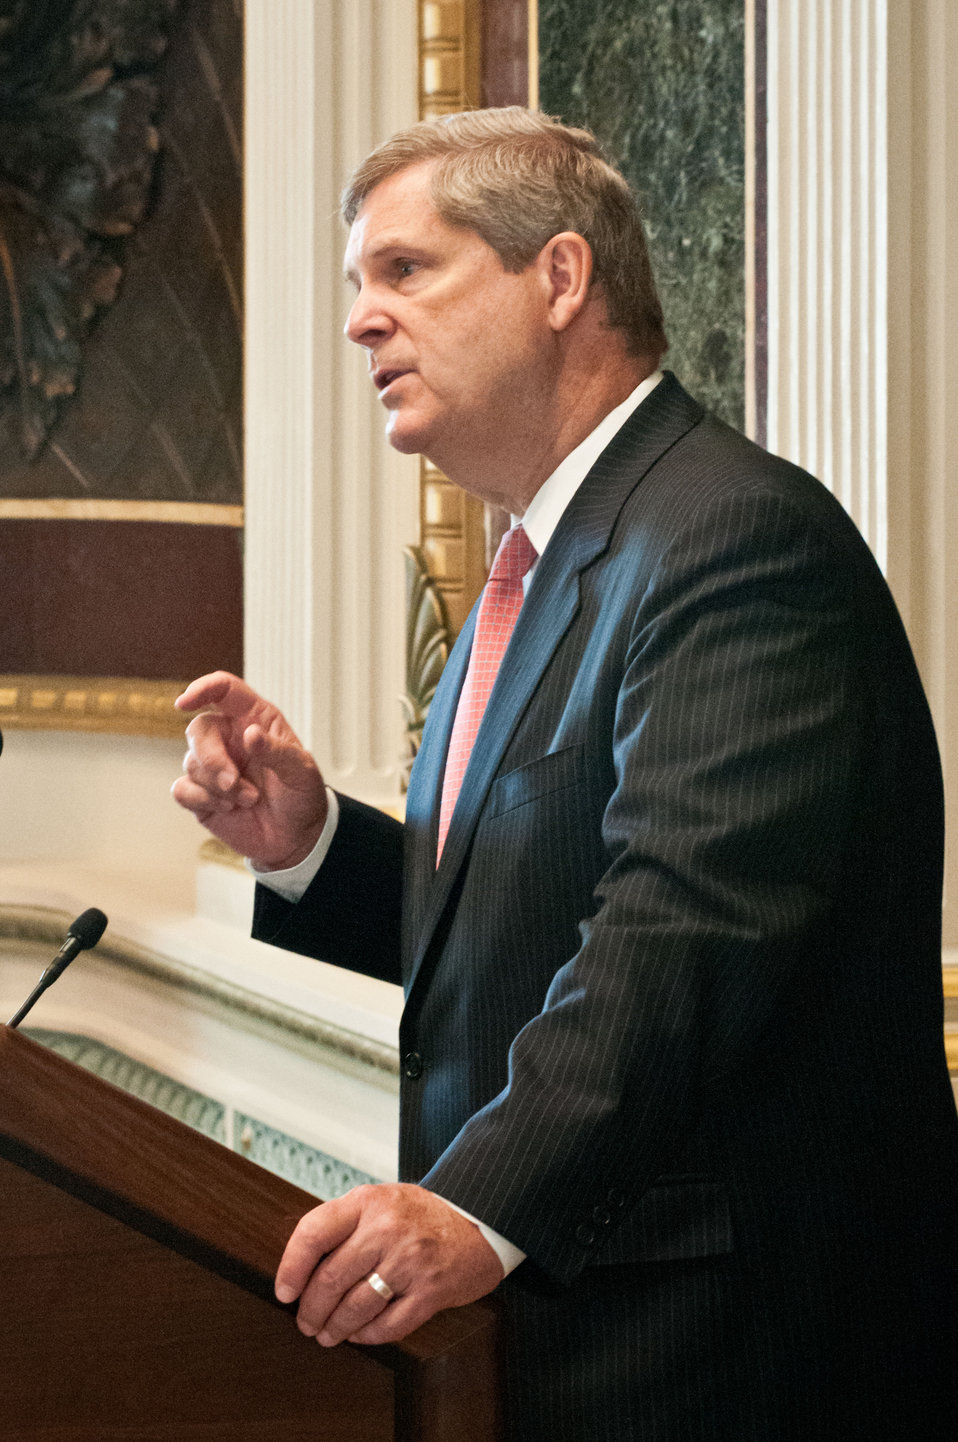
Agriculture Secretary Tom Vilsack discussed the strength of the rural economy at the spring National Association of Farm Broadcasters (NAFB), “Washington Watch” member retreat in Washington, D.C. This year the meeting was held in the Eisenhower Executive Office Building, Indian Treaty Room Tuesday, April 24, 2012 featuring United Sates Department of Agriculture and Obama Administration officials. This opportunity provides an occasion to highlight efforts to rebuild and revitalize rural America, including efforts for the agricultural community. NAFB is the recognized and trusted source of agricultural and rural lifestyle information for America with approximately 200 members who broadcast via radio in nearly every state in the country.